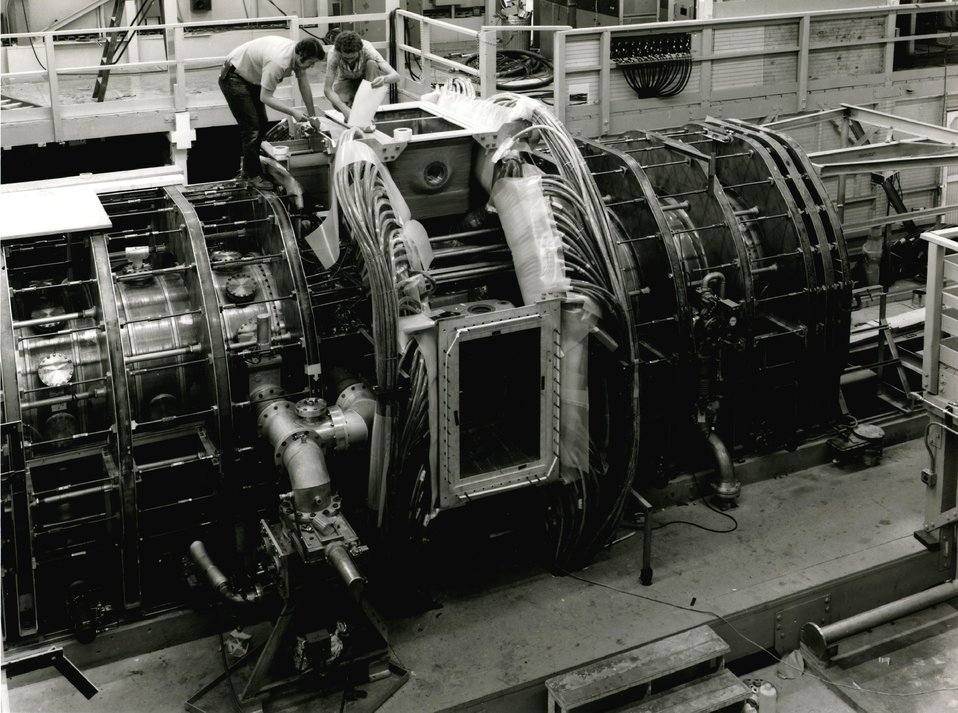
Open-ended magnetic mirror device being modified. The device, 2X-IIB became operational in September, 1974.